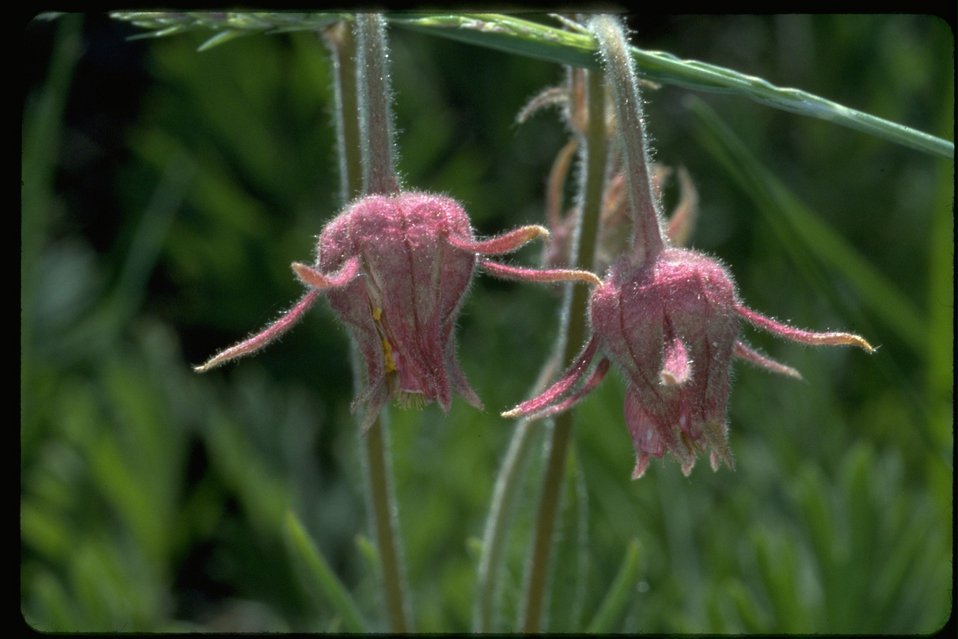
Medium shot of Prairie Smoke wildflowers in early stage.